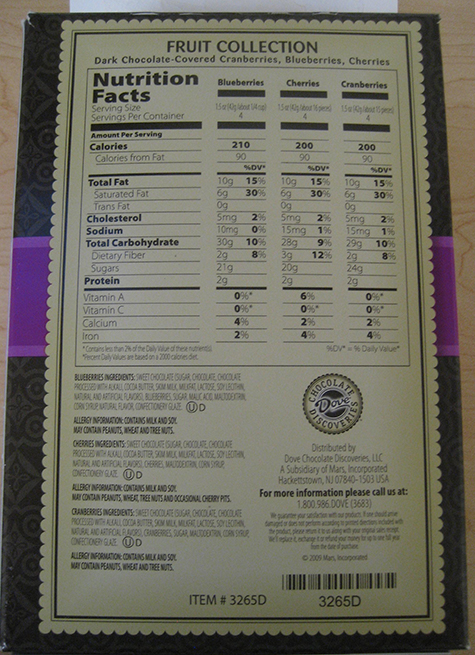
RECALLED – Dark Chocolate-Covered Fruit Collection

August 24, 2013 – Product Recall – Dove Chocolate Discoveries Issues Allergy Alert on Undeclared Nuts in Dark Chocolate Covered Fruit Collection Box.